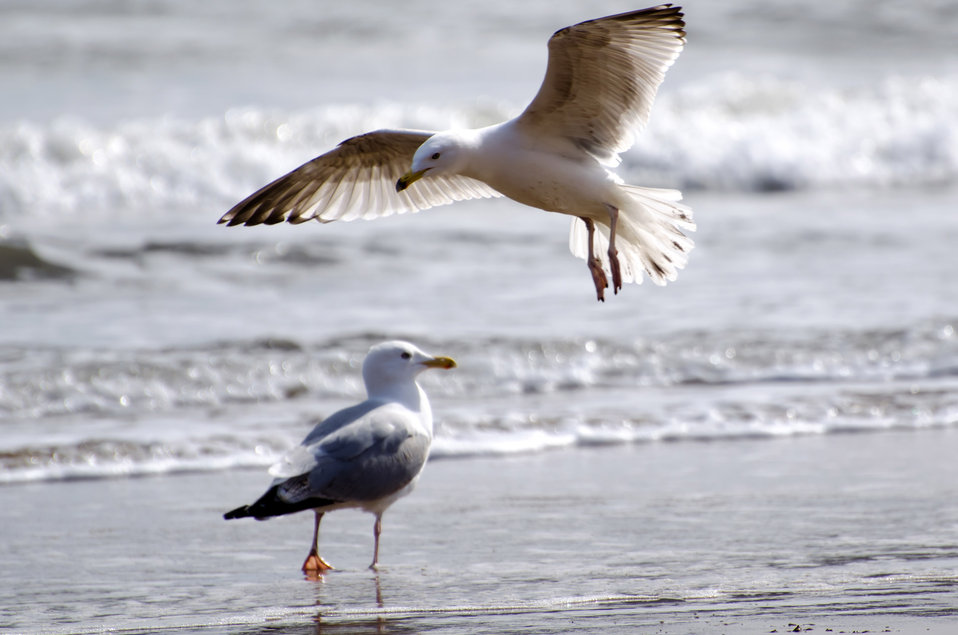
Seagull and sea.